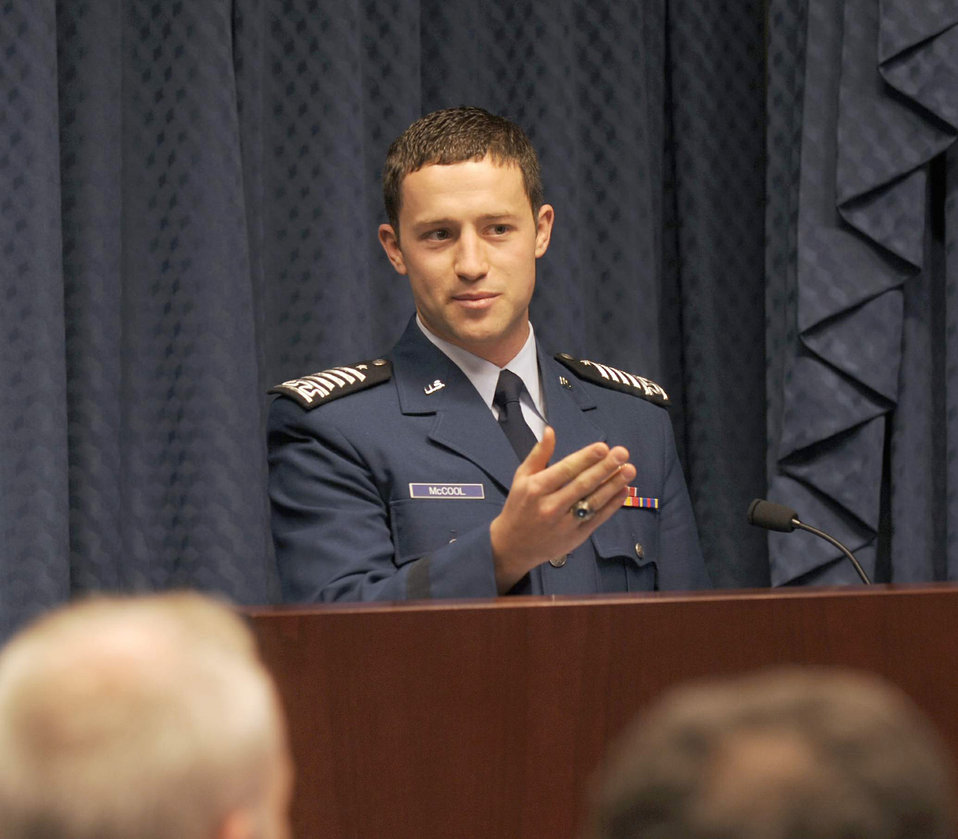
2010 U.S. Air Force Cadet of the Year

Air Force Academy Cadet Christopher J. McCool addresses the audience during a ceremony May 12, 2011, at the Pentagon. Cadet McCool was recognized as the 2010 U.S. Air Force Cadet of the Year at the event.